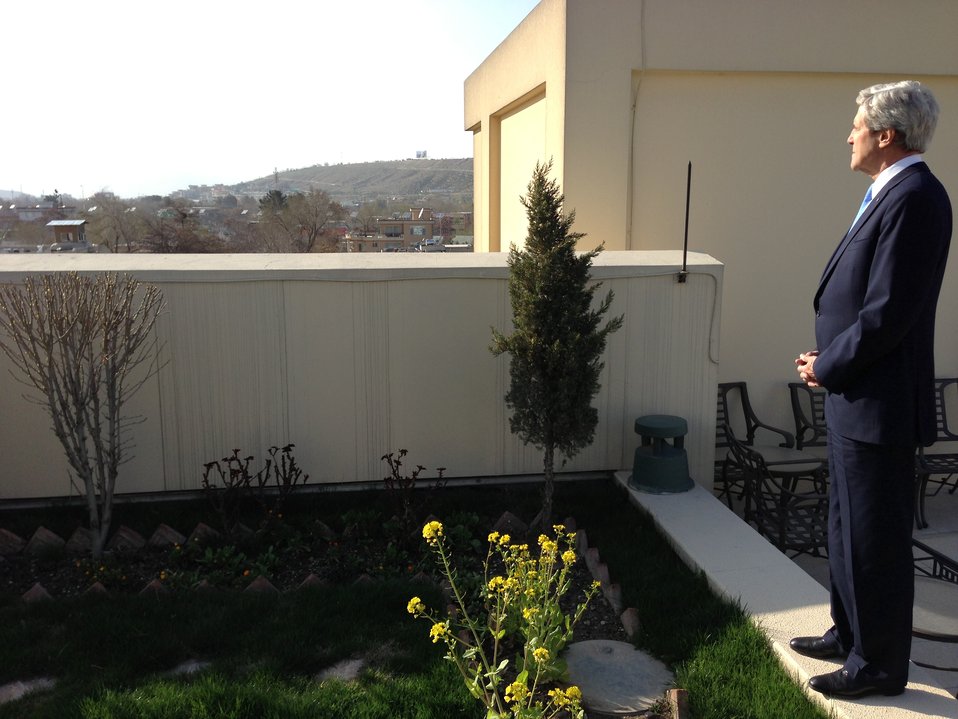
Secretary Kerry Visits Embassy Kabul

U.S. Secretary of State John Kerry takes a late afternoon stroll on the grounds of the U.S. Embassy in Kabul, Afghanistan on March 25, 2013